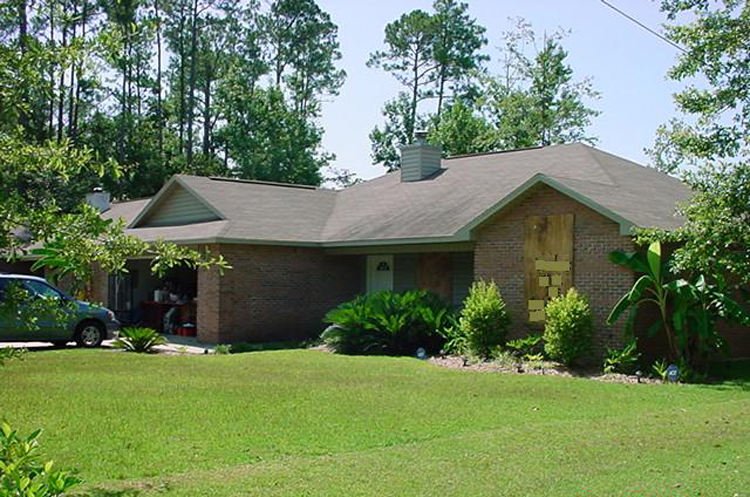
Airman attempts to rebuild life after Hurricane Katrina

First Lt. Dawn Clifton and her family boarded up their three-bedroom home in Ocean Springs, Miss., before evacuating to Florida in August 2005 to escape Hurricane Katrina's projected path toward the Gulf Coast. She was assigned at Keesler Air Force Base, Miss., and is now stationed at the 366th Medical Operations Squadron at Mountain Home AFB, Idaho.